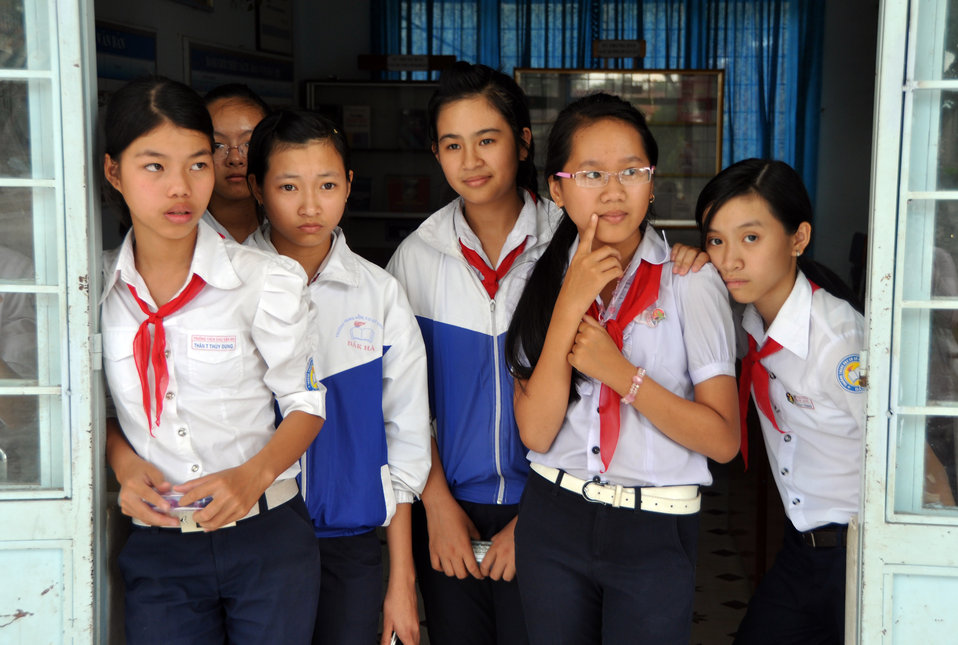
USAID and partners support eyecare, glasses, in Kon Tum

Eyeglasses examination at Luong The Vinh School, Kon Tum Province